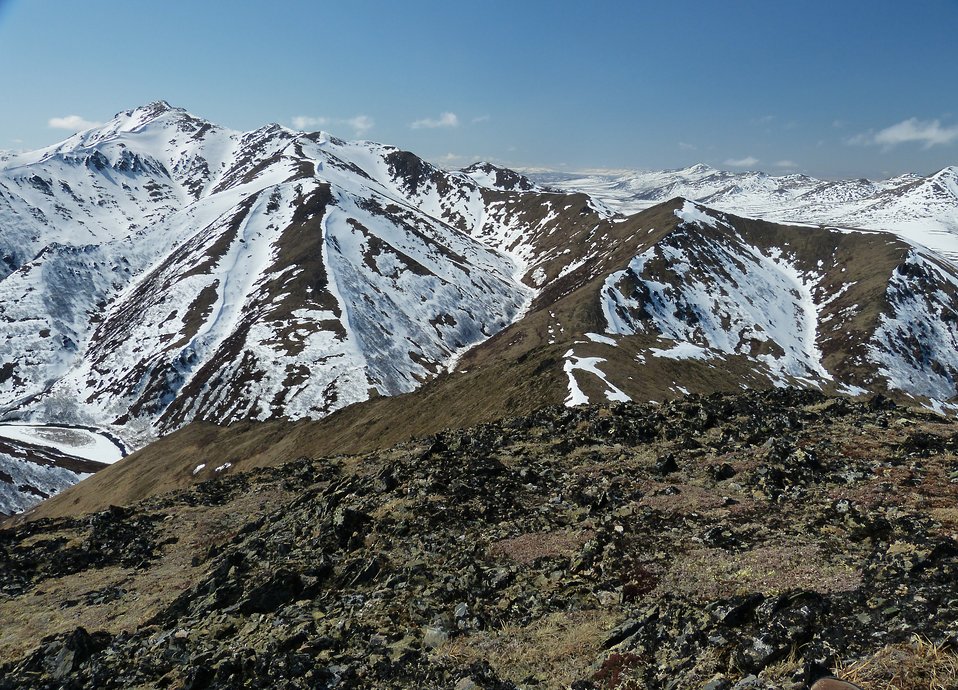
Kilbuck Mountains May2013 KSowl

Cliff-nesting raptor survey, Kilbuck Mountains, Yukon Delta National Wildlife Refuge

Photo credit: Kristine Sowl,
USFWS, YDNWR